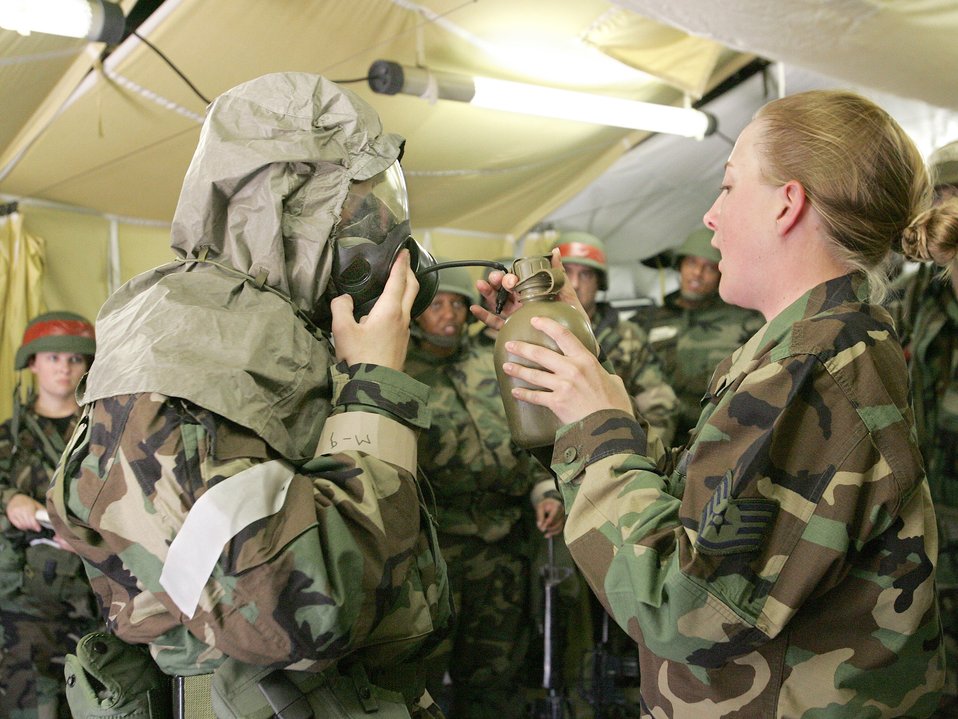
Preparing for a contingency

Second Lt. Joshua Daniels receives water from Staff Sgt. Jonnie Gipson during a demonstration of the proper way to hydrate while wearing a gas mask during a contingency exercise at Lackland Air Force Base, Texas, Tuesday, Feb. 28, 2006. Lieutenant Daniels is with the 37th Services Squadron and Sergeant Gipson is with the 37th Civil Engineer Squadron.